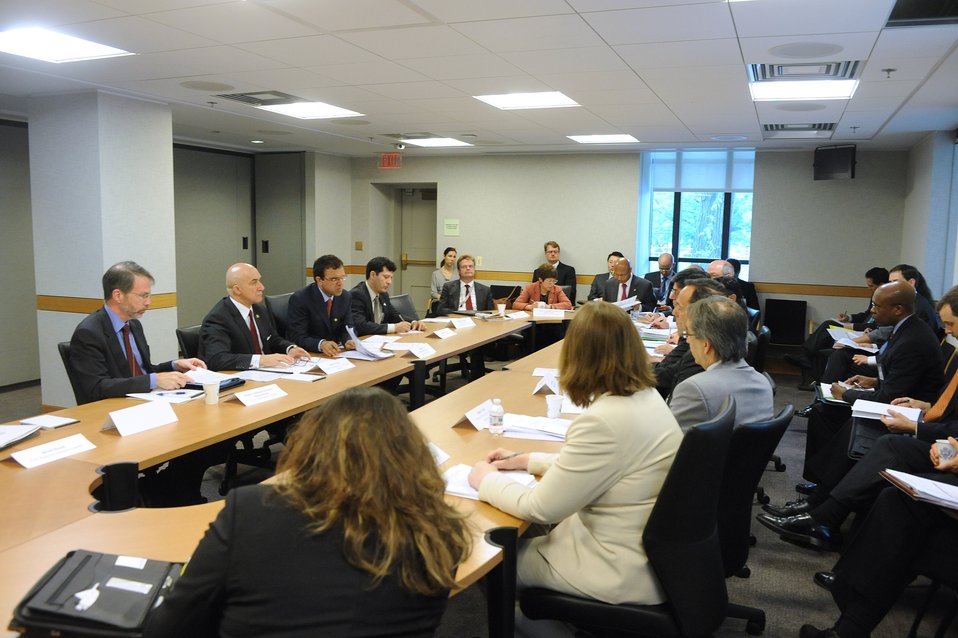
Economic Development Interagency Working Group Session of the U.S.-Afghanistan Strategic Partnership Dialogue

U.S. Deputy Secretary of State Lew, U.S. Treasury Deputy Secretary Wolin, Afghan Finance Minister Zakhilwal, and Afghan Mines Minister Shahrani meet during the Economic Development Interagency Working Group Session of the U.S.-Afghanistan Strategic Partnership Dialogue at the U.S. Department of State, Washington, D.C., May 11, 2010.